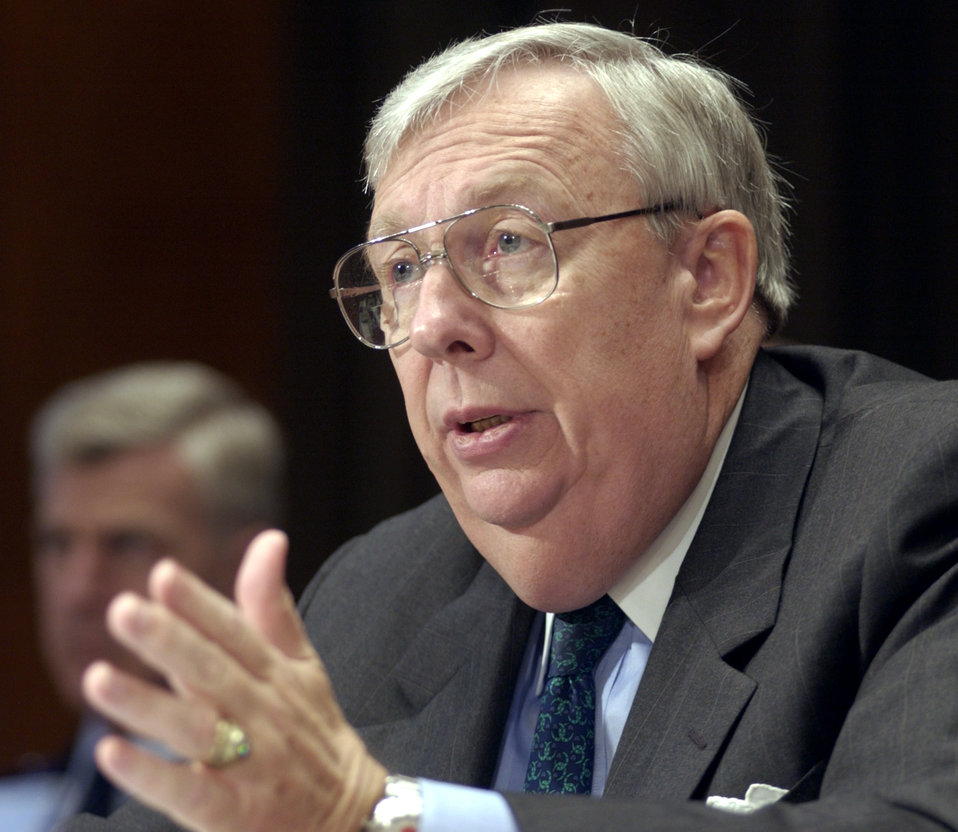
Roche

WASHINGTON -- Secretary of the Air Force Dr. James G. Roche told members of the Senate Appropriations Committee subcommittee on defense March 26 that the U.S.-led coalition has achieved total air dominance in the skies over Iraq.